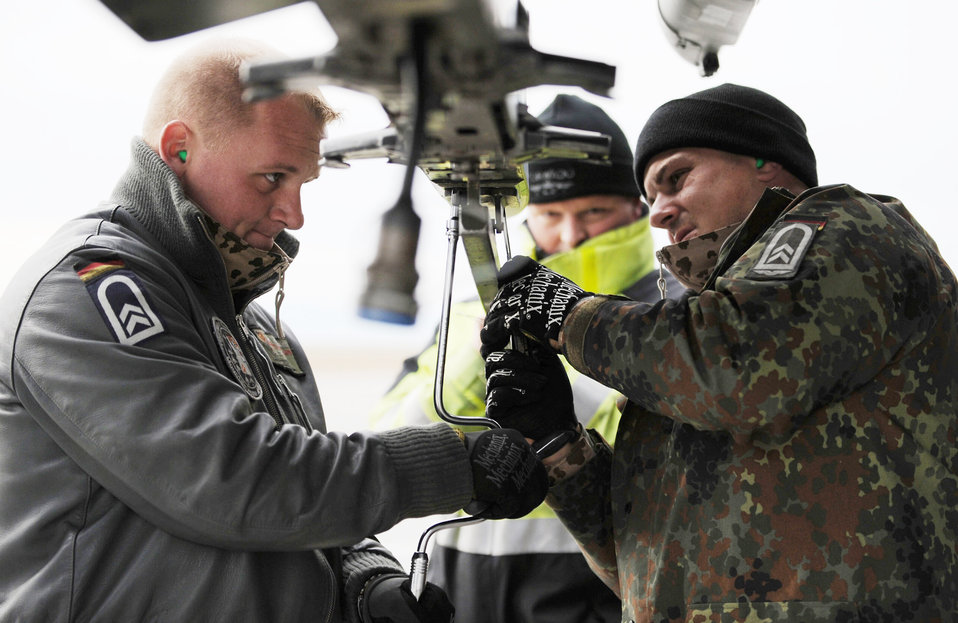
Exercise Mountain Roundup

Tech. Sgt. Torsten Naujoks (left) and Tech. Sgt. Fabian Schoor, maintenance crew chiefs from the German air force Flying and Training Center at Holloman Air Force Base, N.M., perform post flight maintenance on a PA-200 Tornado Oct. 21, 2009, following a mission during the Mountain Roundup exercise at Mountain AFB, Idaho. Mountain Roundup is a large-force exercise running from Oct. 15 through Oct. 30 and includes participants from the German air force, U.S. Air Force, U.S. Navy and U.S. Marines.